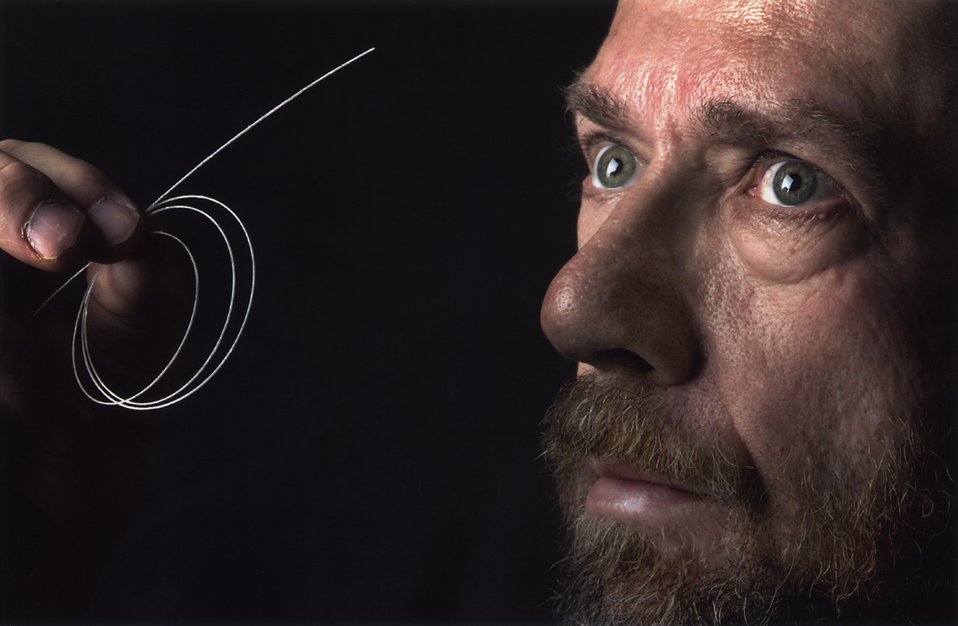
SANDIA RESEARCHER, DAVID HOLCOMB EXAMINING THE DISPOSABLE FIBER OPTICS HE DEVELOPED.

SANDIA RESEARCHERS DEVELOPED A TECHNIQUE USING AN INEXPENSIVE DISPOSABLE FIBER OPTICS TELEMETRY SYSTEM TO RELAY REAL-TIME INFORMATION ABOUT A DRILLING PROCESS AS IT IS GOING ON. THE TECHNIQUE RELAYS INFORMATION FROM THE END OF A DRILL STRING CONCERNING TEMPERATURE, PRESSURE, CHEMISTRY, AND ROCK FORMATION, WITHOUT STOPPING THE DRILLING OPERATION. THIS TECHNOLOGY IS OF INTEREST TO THE OIL AND GAS INDUSTRY.